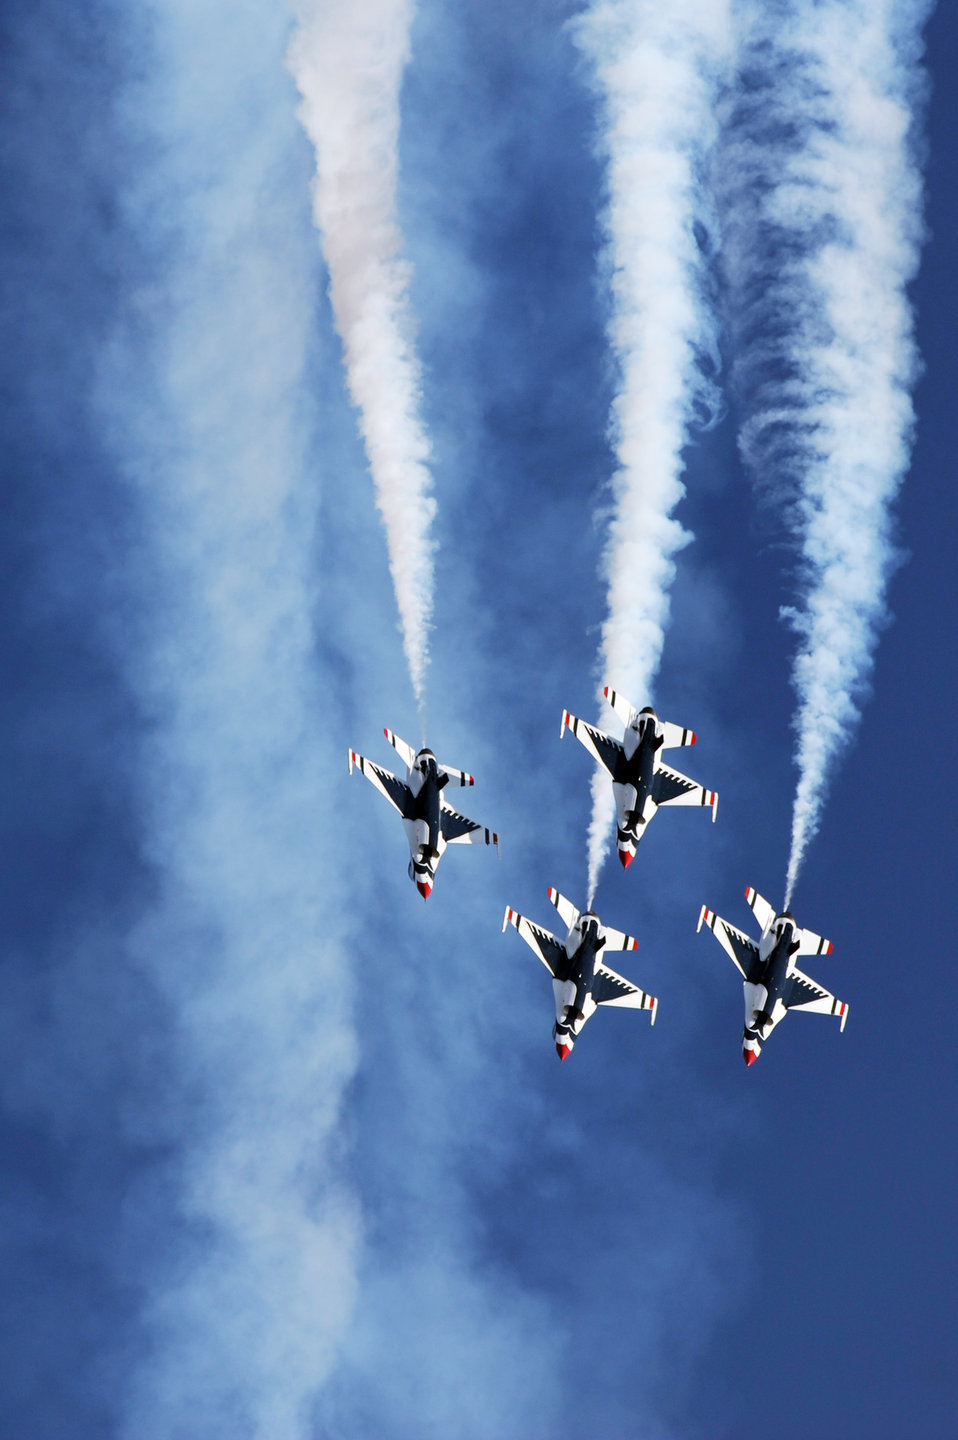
Thunderbirds close air show season

F-16s with the U.S. Air Force Air Demonstration Team Thunderbirds fly the arrowhead loop Nov. 13, 2009, during the 2009 Aviation Nation Nellis Air Force Base, Nev., open house. The open house is an opportunity for the Las Vegas community to view aerial demonstrations and static displays of various aircraft from the military.